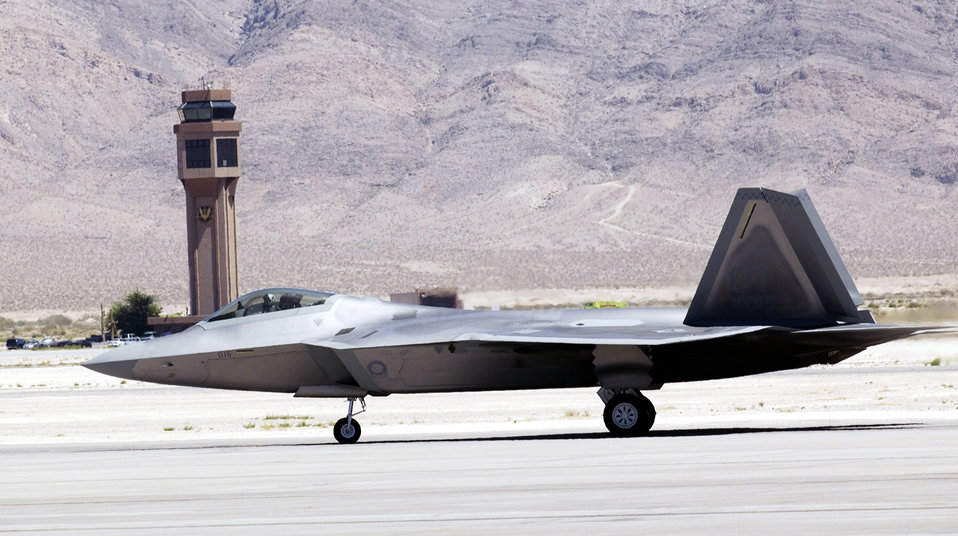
Raptor 4

NELLIS AIR FORCE BASE, Nev. -- An F/A-22 Raptor taxis on the flightline here July 9. This is the fourth Raptor to arrive from the factory. Eventually, 17 of the next-generation stealth fighters will be assigned here.